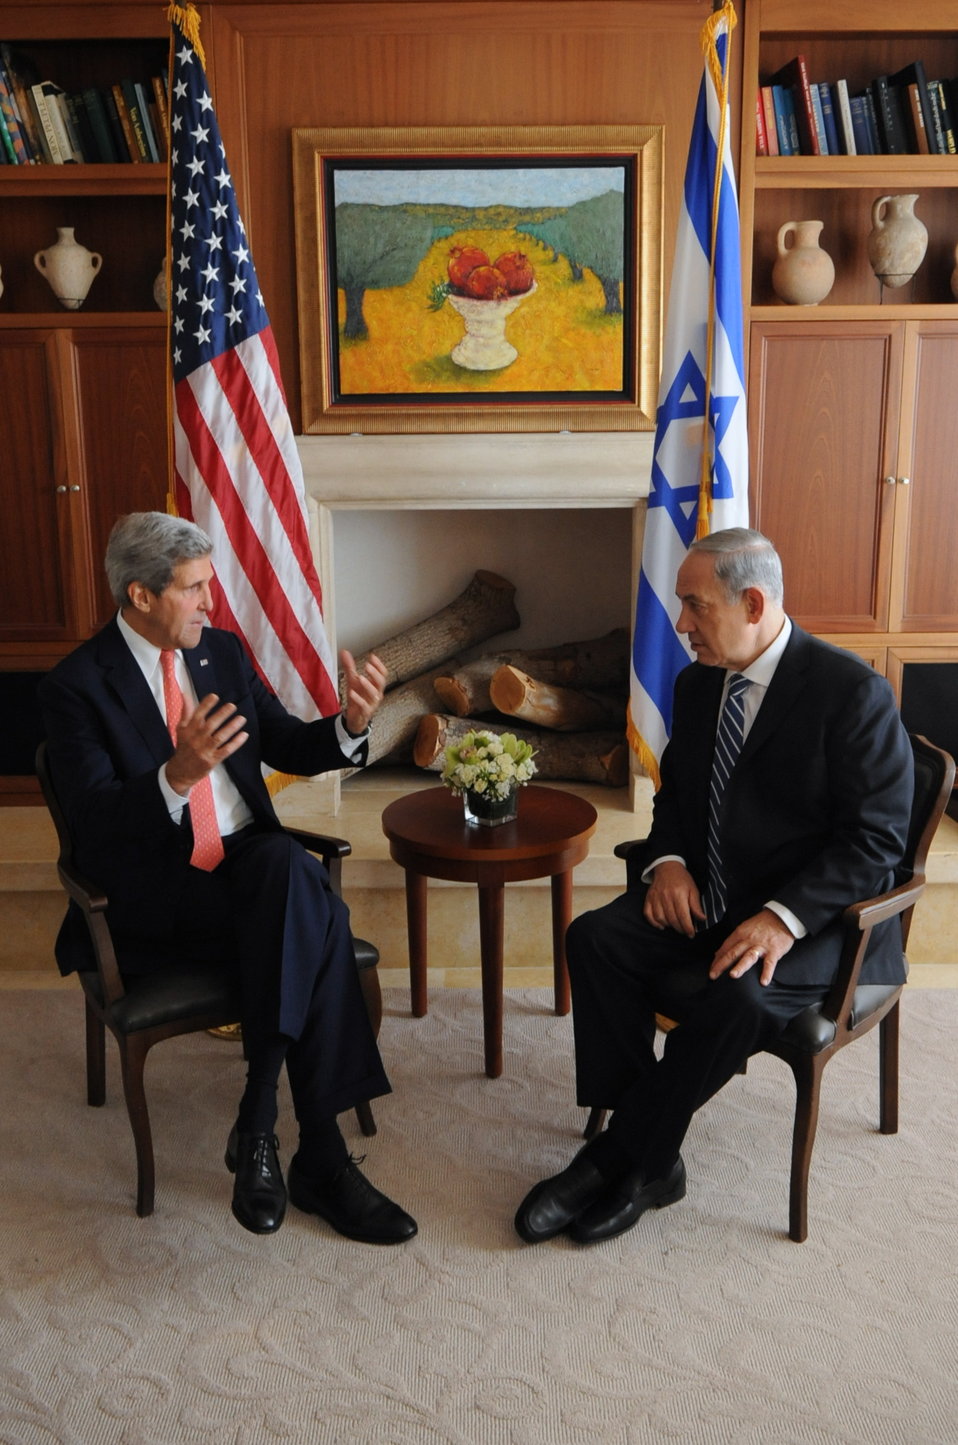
Secretary Kerry Chats With Israeli Prime Minister Netanyahu

U.S. Secretary of State John Kerry chats with Israeli Prime Minister Benjamin Netanyahu before a discussion focused on the Middle East peace process, Iran, and Syria in Jerusalem on November 6, 2013. You can view Secretary Kerry's remarks before his meeting with Prime Minister Netanyahu here: www.state.gov/secretary/remarks/2013/11/217189.htm.